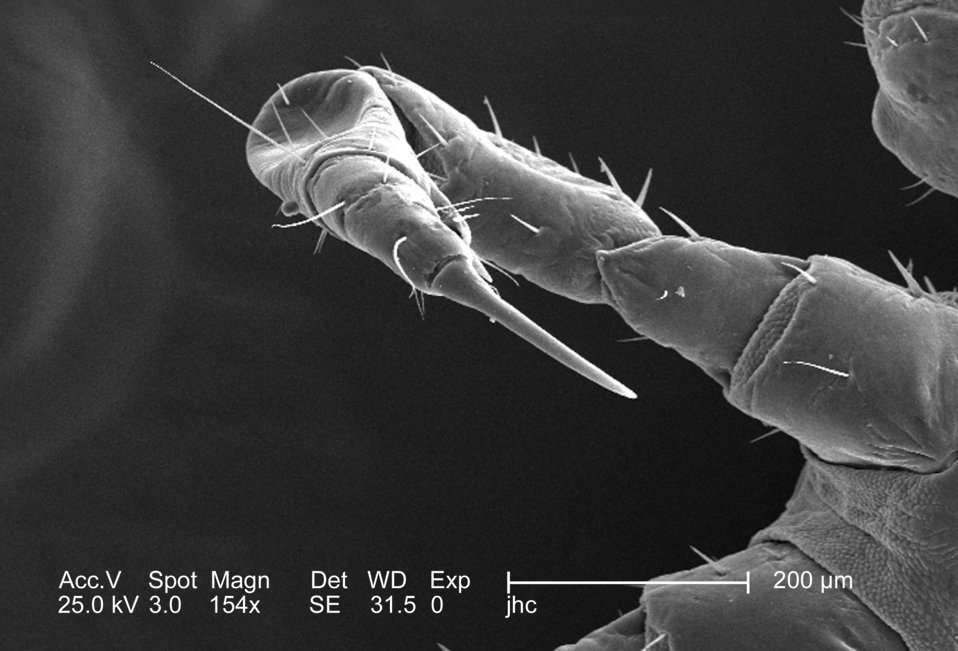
At half the magnification of PHIL# 9241, this 2006 scanning electron micrograph (SEM) depicted a dorsal view of the right flexed foreleg of a female body louse, Pediculus humanus var. corporis, in its entirty. What is visible includes the most distal segment, known as the 'pretarsus', followed by the more proximal 'tarsus', then the 'tibia', 'femur', and 'trochanter', and finally the most proximal segment, the 'coxa'. In the case of the louse, the leg segments are very stout, and end in claws, which it used to firmly grasp clothing, or a host's hair shafts. Note how the exoskeletal covering appears to possess an almost fabric-like appearance to the chitinous exoskeleton, which acts to add flexibility at the coxa-trochanteric joint.